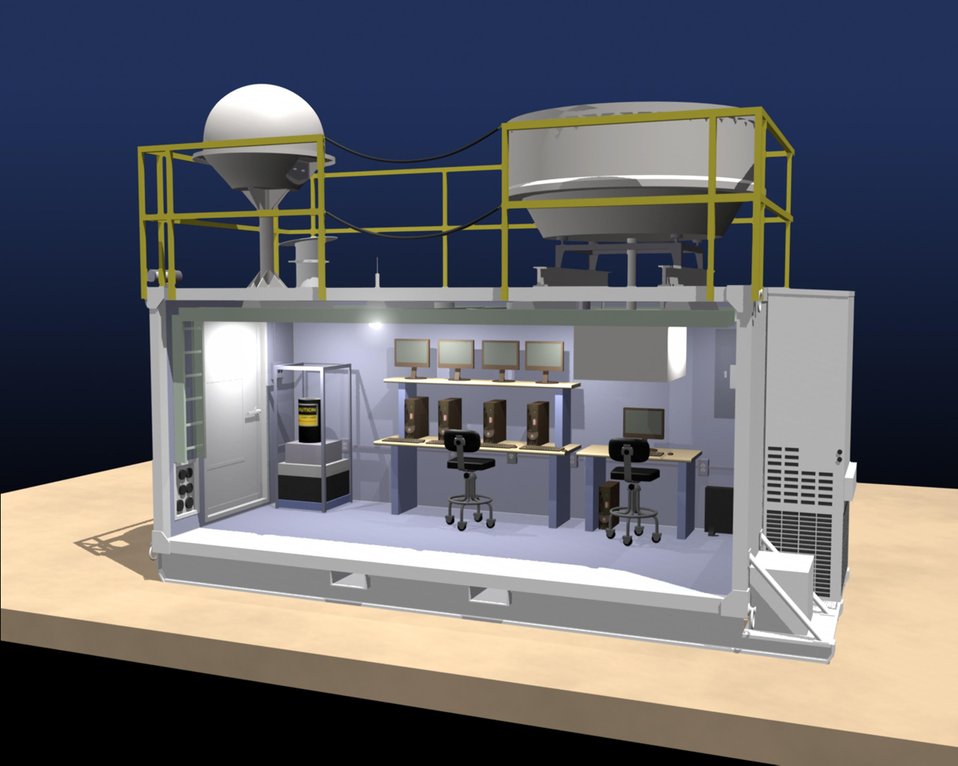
ARTIST'S 3D RENDERING OF THE ARM CLIMATE RESEARCH FACILITY MOBILE OPERATIONS SHELTER.

THE ATMOSPHERIC RADIATION MEASUREMENT (ARM) SITES HAVE BEEN DESIGNATED NATIONAL SCIENTIFIC USER FACILITIES BY DOE. THE PERMANENT SITES ARE LOCATED AT THE NORTH SLOPE OF ALASKA, THE SOUTHERN GREAT PLAINS OF OKLAHOMA, AND THE TROPICAL WESTERN PACIFIC. THE MOBILE SITE IS DESIGNED TO BE DEPLOYED AROUND THE WORLD FOR UP TO 18 MONTHS. THE NEW ARM CLIMATE RESEARCH FACILITY HAS THE POTENTIAL TO CONTRIBUTE A WIDE RANGE OF INTERDISCIPLINARY SCIENCE AREAS, SUCH AS HYDROLOGY, ECOLOGY AND THE UNDERSTANDING OF CLIMATE.